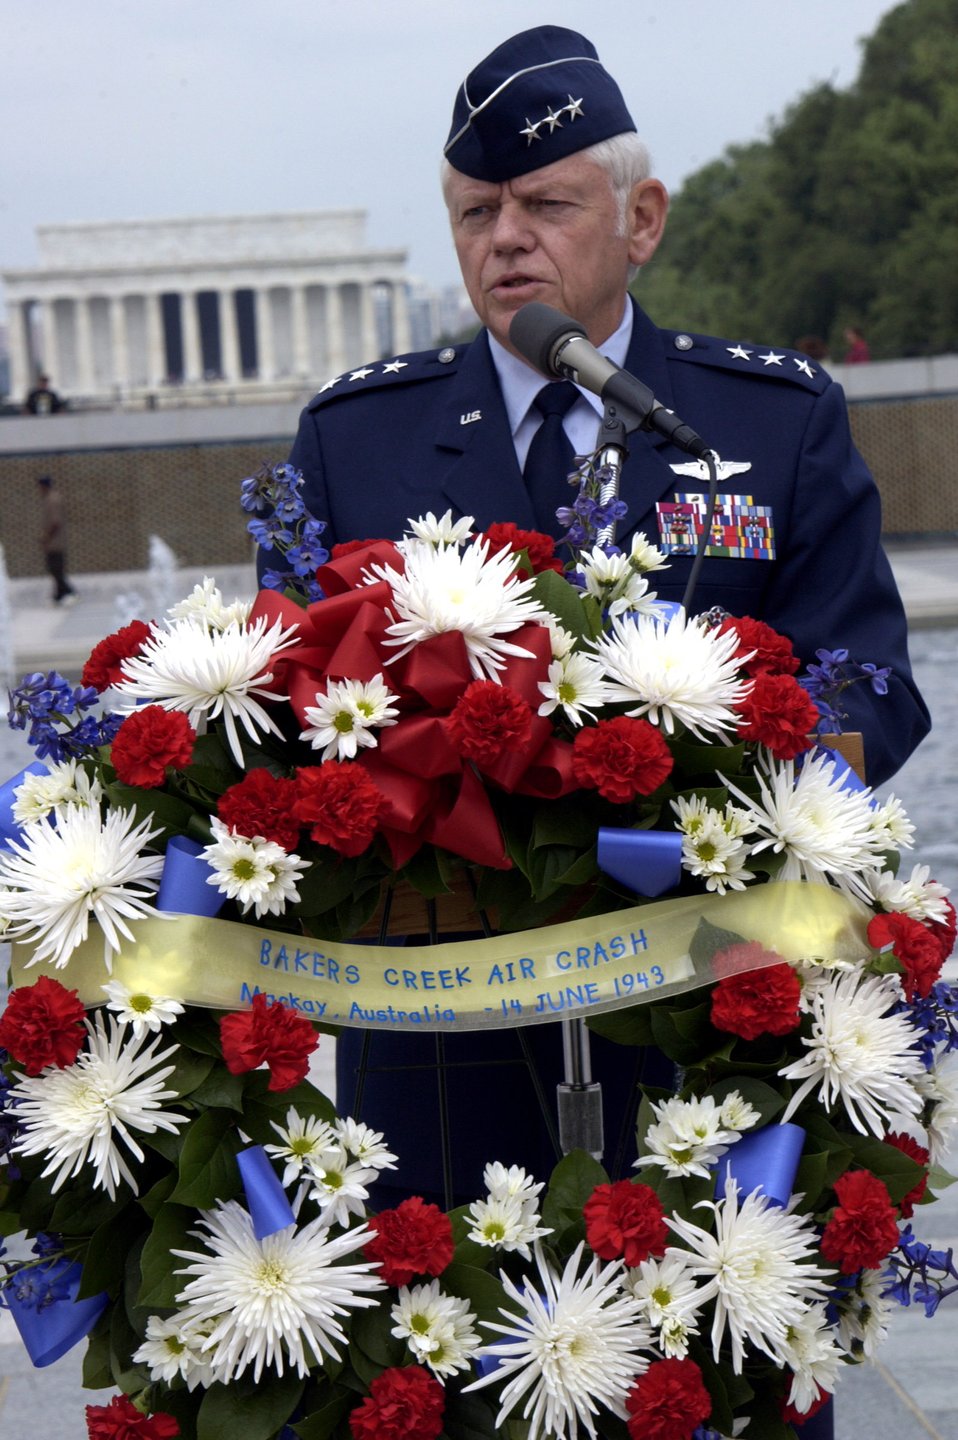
Fallen Bakers Creek servicemembers honored at WWII Memorial

At a ceremony at the World War II Memorial June 14 in Washington D.C., Lt. Gen. Arthur Lichte, Air Force assistant vice chief of staff, recounted the Bakers Creek air crash in Australia in June 1943 in which 40 American servicemembers lost their lives. The ceremony here commemorated the 64th anniversary of the crash.